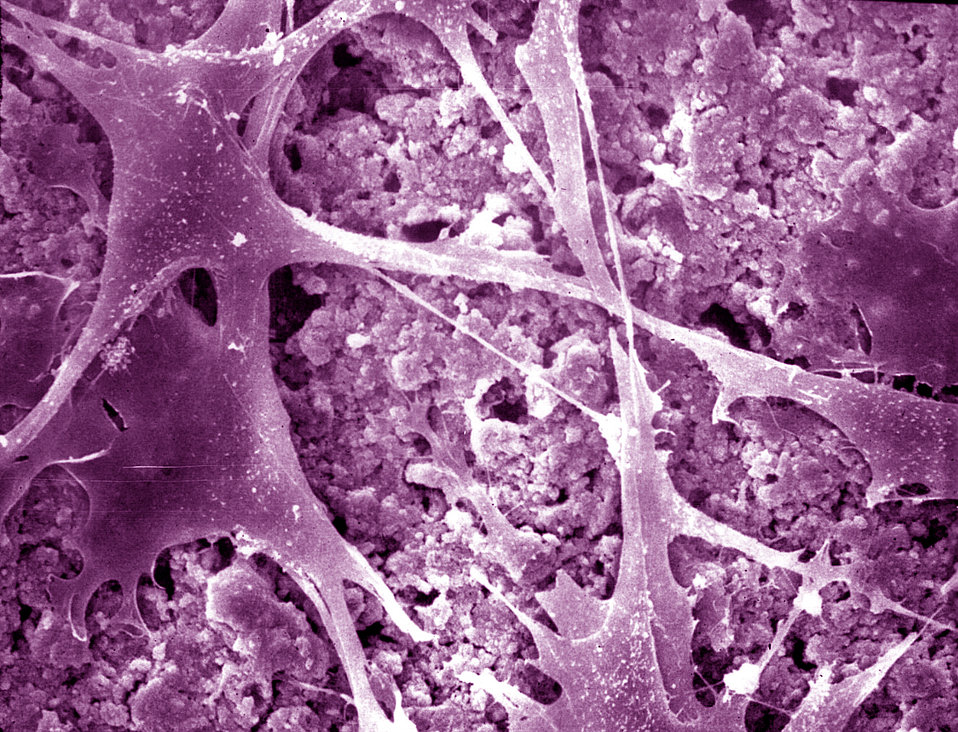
Bone Cells

Colorized scanning electron micrograph shows bone cells attaching to a new type of bone cement made of calcium phosphate.